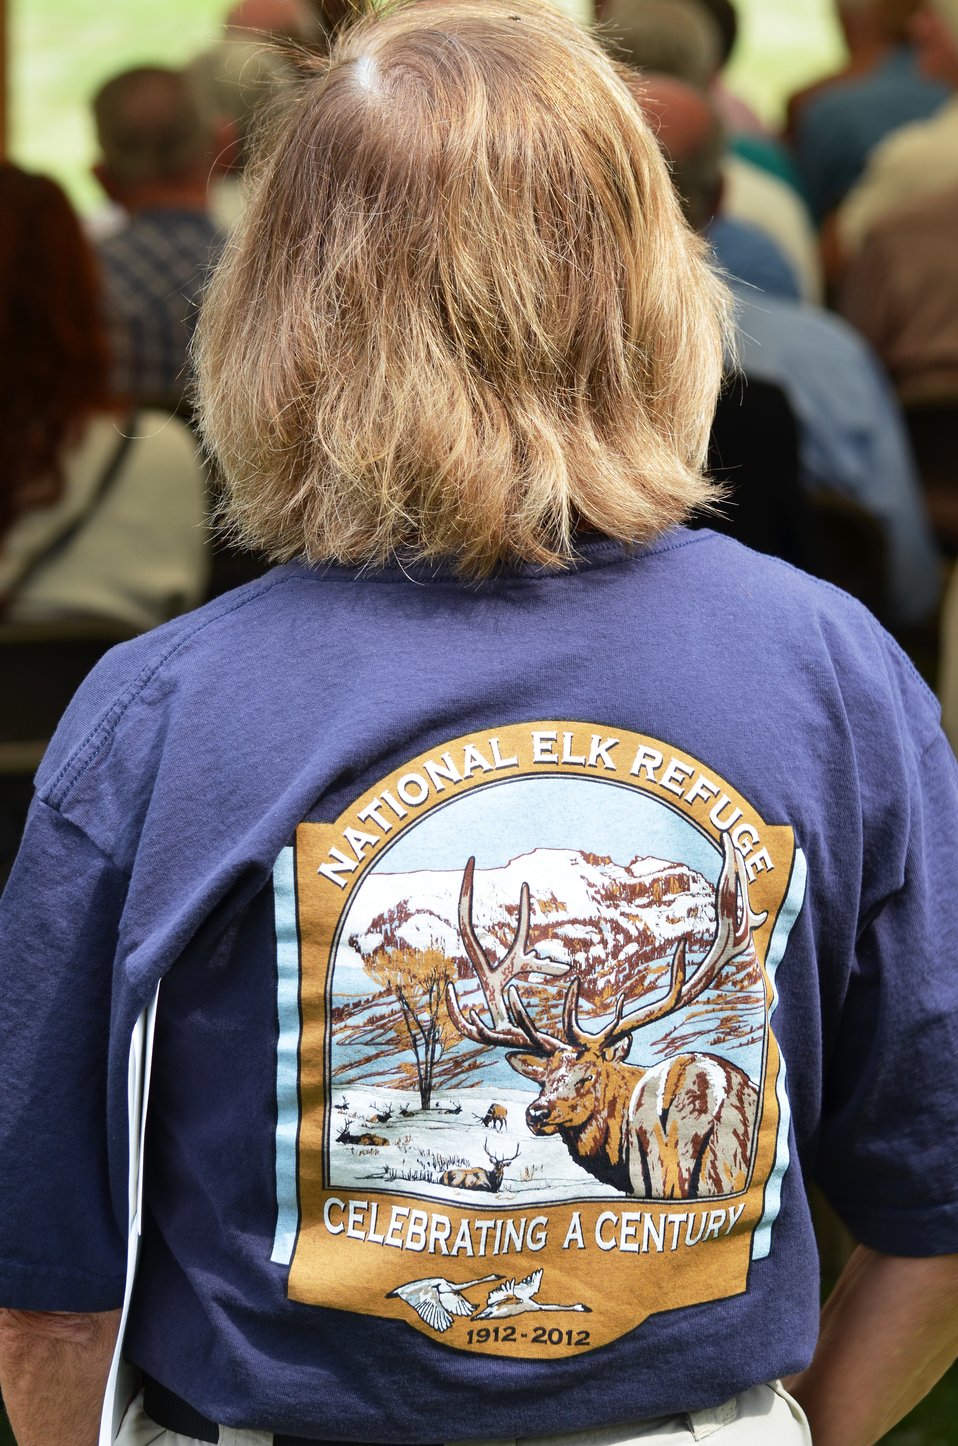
Dressing the Part

National Elk Refuge volunteer Chris Clapp sports a new tee shirt at the National Elk Refuge's centennial ceremony on August 10. The tee shirts were developed and sold by the Grand Teton Association, the refuge's nonprofit cooperating association that operates a sales outlet in the Jackson Hole & Greater Yellowstone Visitor Center.

Credit: USFWS / Bobby Harkey, National Elk Refuge volunteer